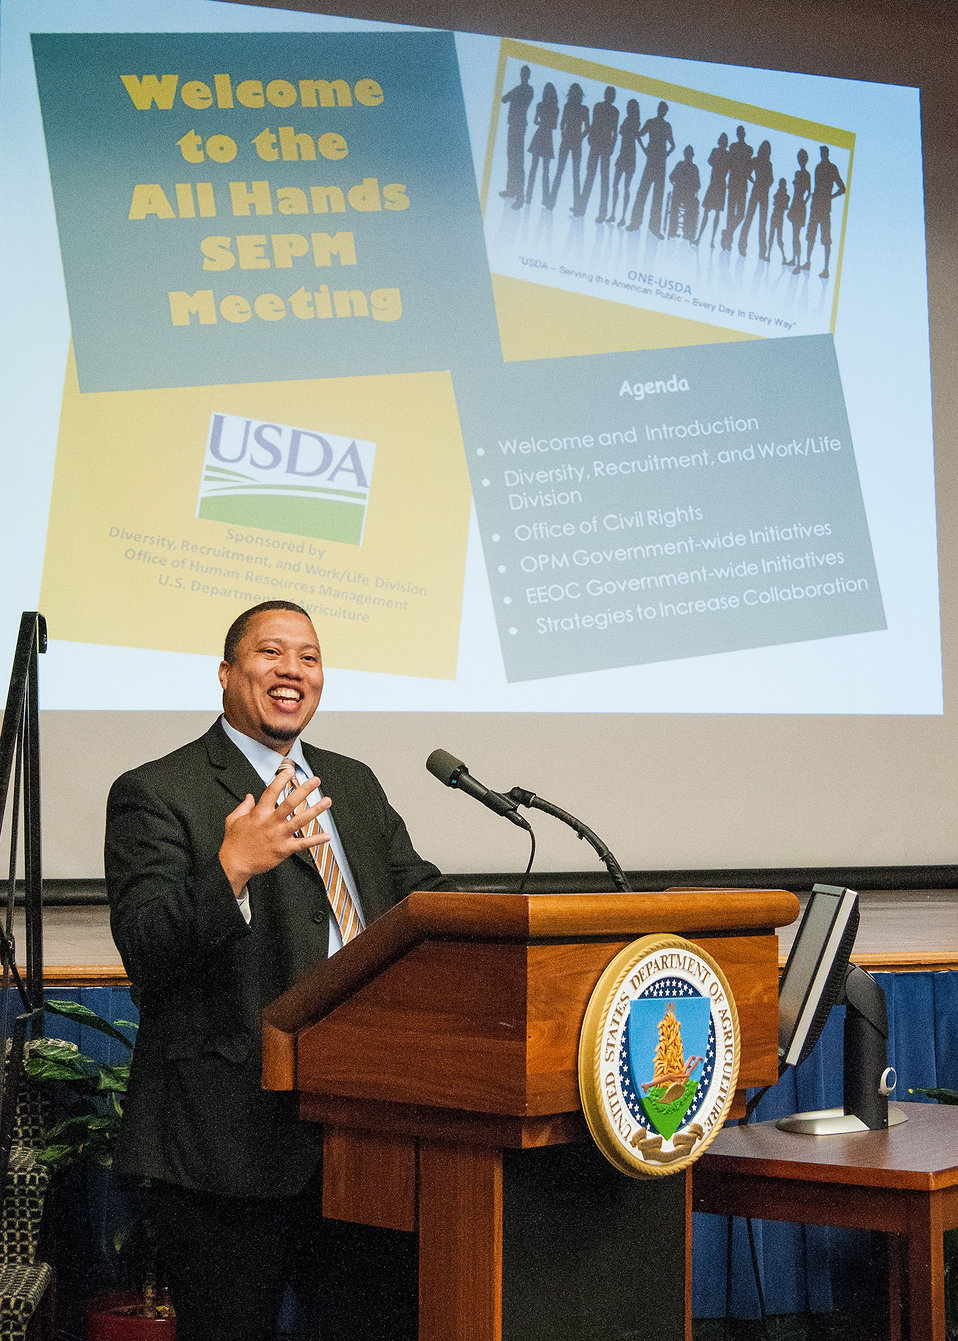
U.S. Equal Employment Opportunity Commission (EEOC) Office of Federal Operations Federal Sector Programs Directo Dexter Brooks speaks EEOC Government Wide Initiatives at the First Annual All Hands Special Emphasis Program Managers (SEPM) Meeting at the U.S. Department of Agriculture Jefferson Auditorium in Washington, D.C. on Wednesday, Mar. 13, 2013.